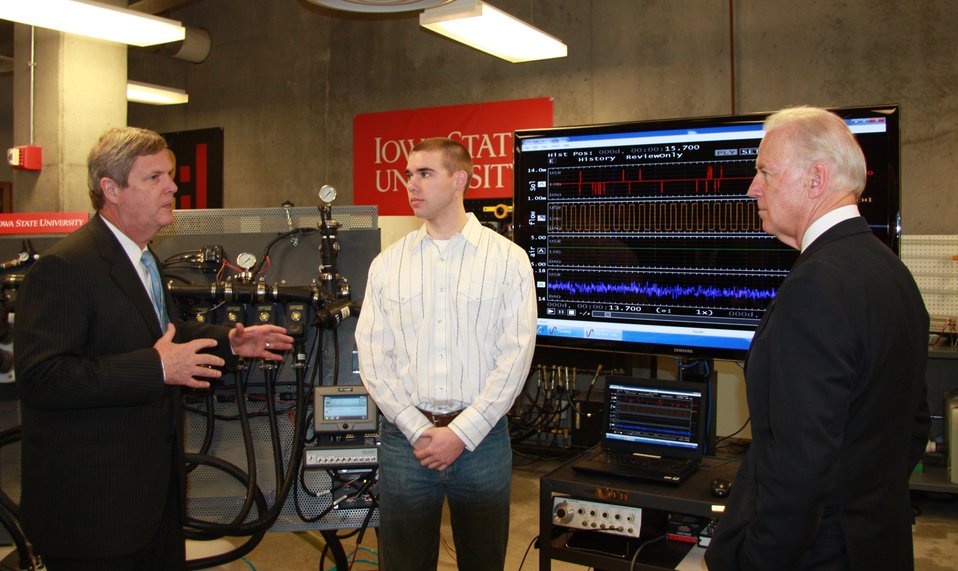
Agriculture Secretary Tom Vilsack and Vice President Joe Biden tour the Make2Innovate Lab in Howe Hall at the College of Engineering, Iowa State University in Ames, IA, on Thursday, March 1, 2012.